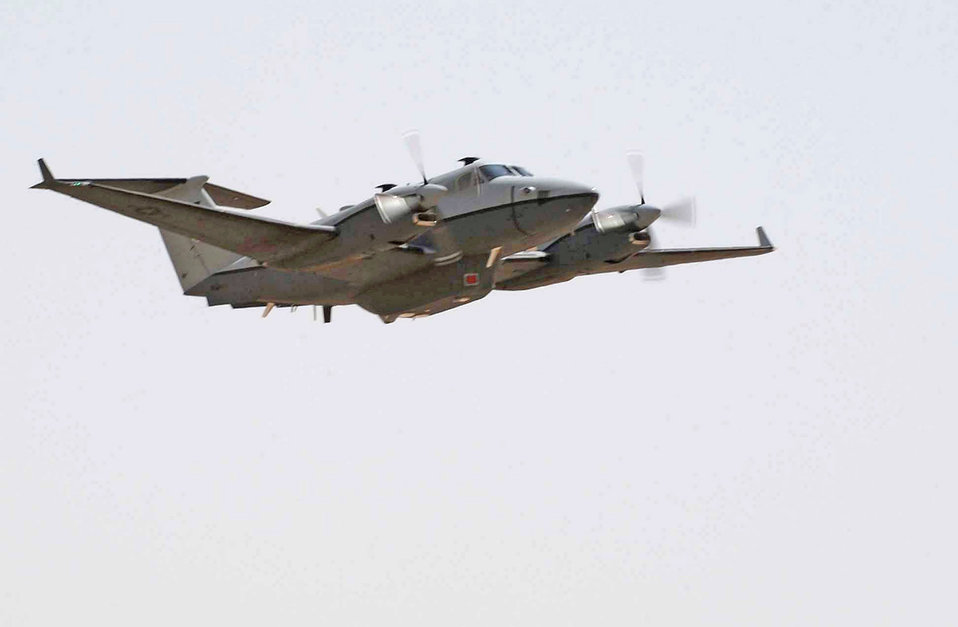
MC-12 flies first combat mission

The first MC-12 aircraft in-theater flies its first combat sortie June 10 from Joint Base Balad, Iraq. A new Air Force medium-altitude manned special-mission turboprop aircraft, the MC-12 provides real-time intelligence, surveillance and reconnaissance capability and supports coalition and joint ground forces.